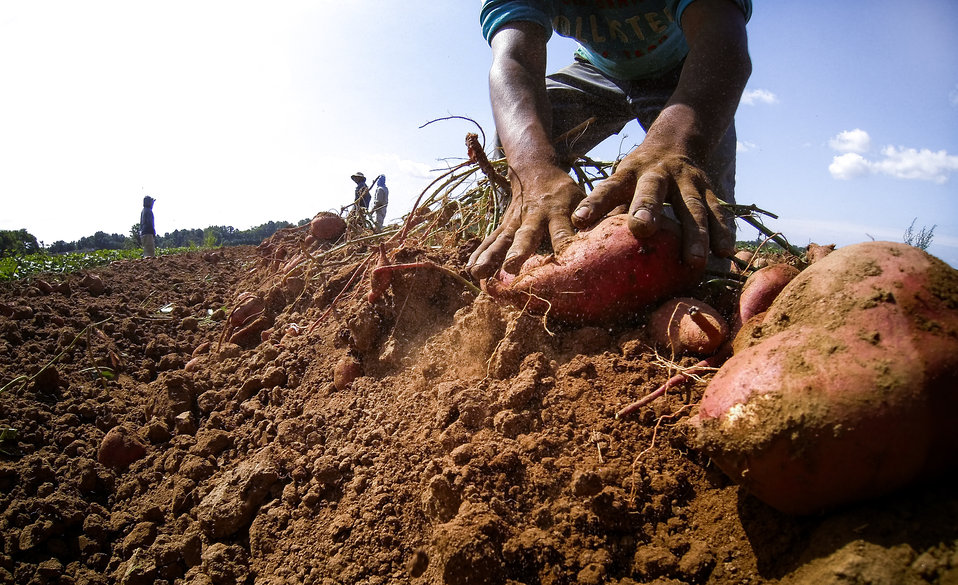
Migrant workers pick, separate, and process sweet potatoes at Kirby Farms in Mechanicsville, VA on Friday, Sept. 20, 2013. 200 acres of the farm are devoted to eggplant, spinach, beets, tomato, jalapeno peppers, melons and a variety of greens. Soybeans and small grain are grown on the remaining 300 acres. Using rotational crop practices allows Kirby Farms to double and triple crop yields. Wholesalers, who buy from this farm, sell the produce to major supermarkets in the Mid-Atlantic region, from North Carolina to Maryland. Restaurants in the local area prepare and serve the local bought produce to patrons in the Richmond, VA metropolitan area.